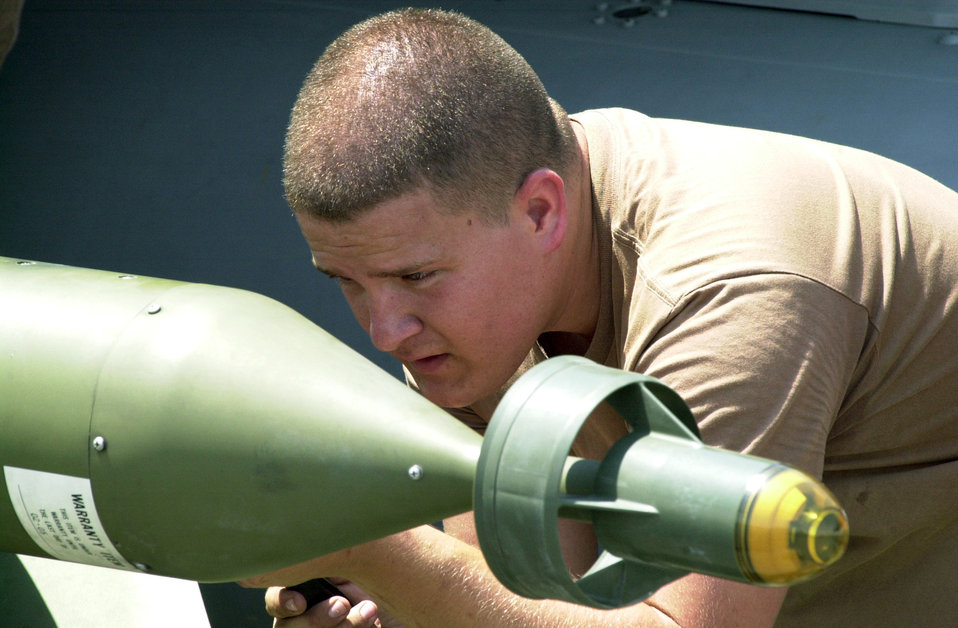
Under warranty

SOUTHWEST ASIA -- Senior Airman Timothy Nelson loads a bomb onto an F-16 Fighting Falcon at a forward-deployed location. He is deployed from the Indiana Air National Guard at Fort Wayne.